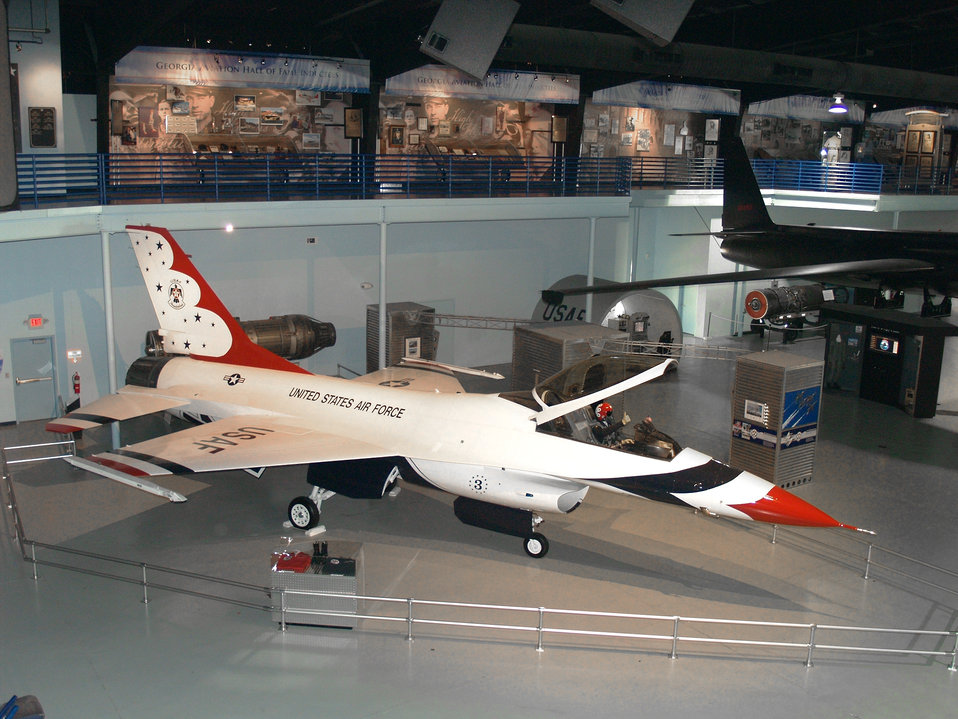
Museum of Aviation

A former Thunderbirds F-16 is displayed at the Museum of Aviation in Warner-Robins, Ga.